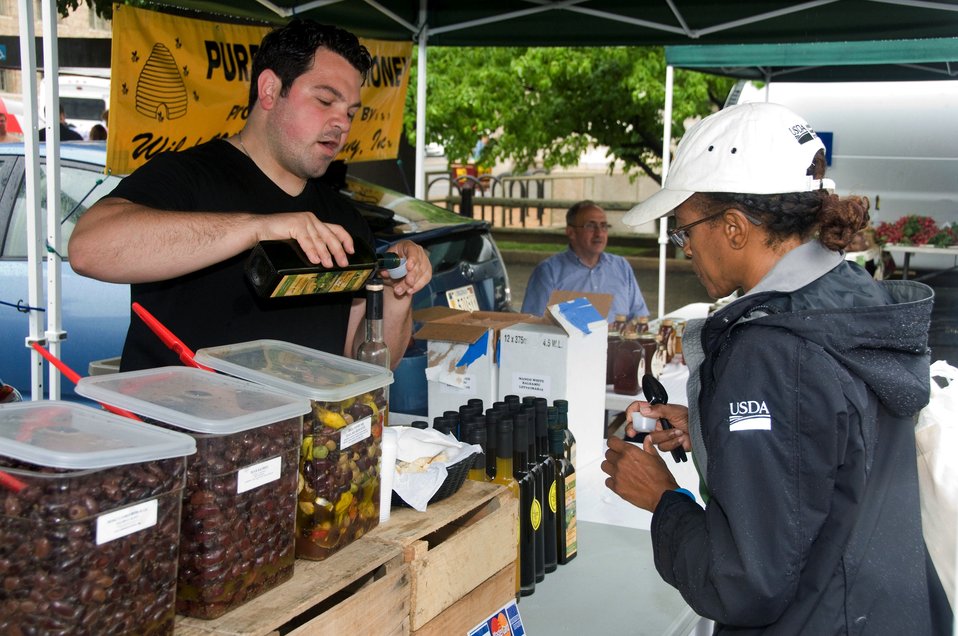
Sampling Olives and Products

A vendor discusses his products and provides samples at the USDA Farmers Market.